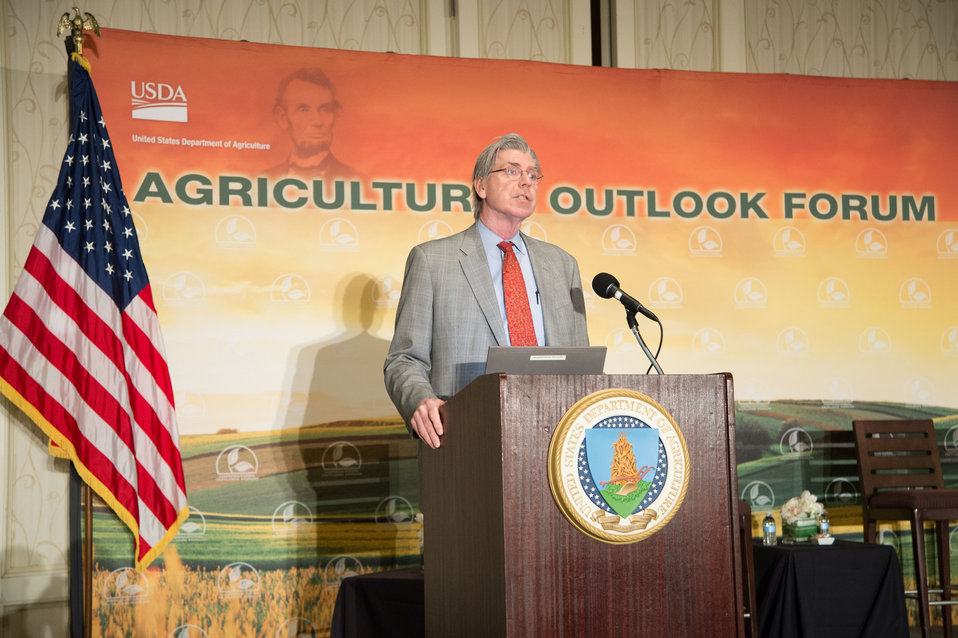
U.S. Department of Agriculture (USDA) Chief Economist Joseph Glauber gives a synopsis of U.S. Agriculture economy at the 2014 Agricultural Outlook Forum in Arlington, VA., on Thursday, Feb. 20, 2014. The U.S. Department of Agriculture's (USDA) annual Agricultural Outlook Forum brings together the agricultural community to discuss policy, trade, science, rural development, and the economic outlook for the coming year. The Forum also focuses on forestry, health and nutrition issues, and the changing dynamics and face of rural America.USDA photo by Bob Nichols.